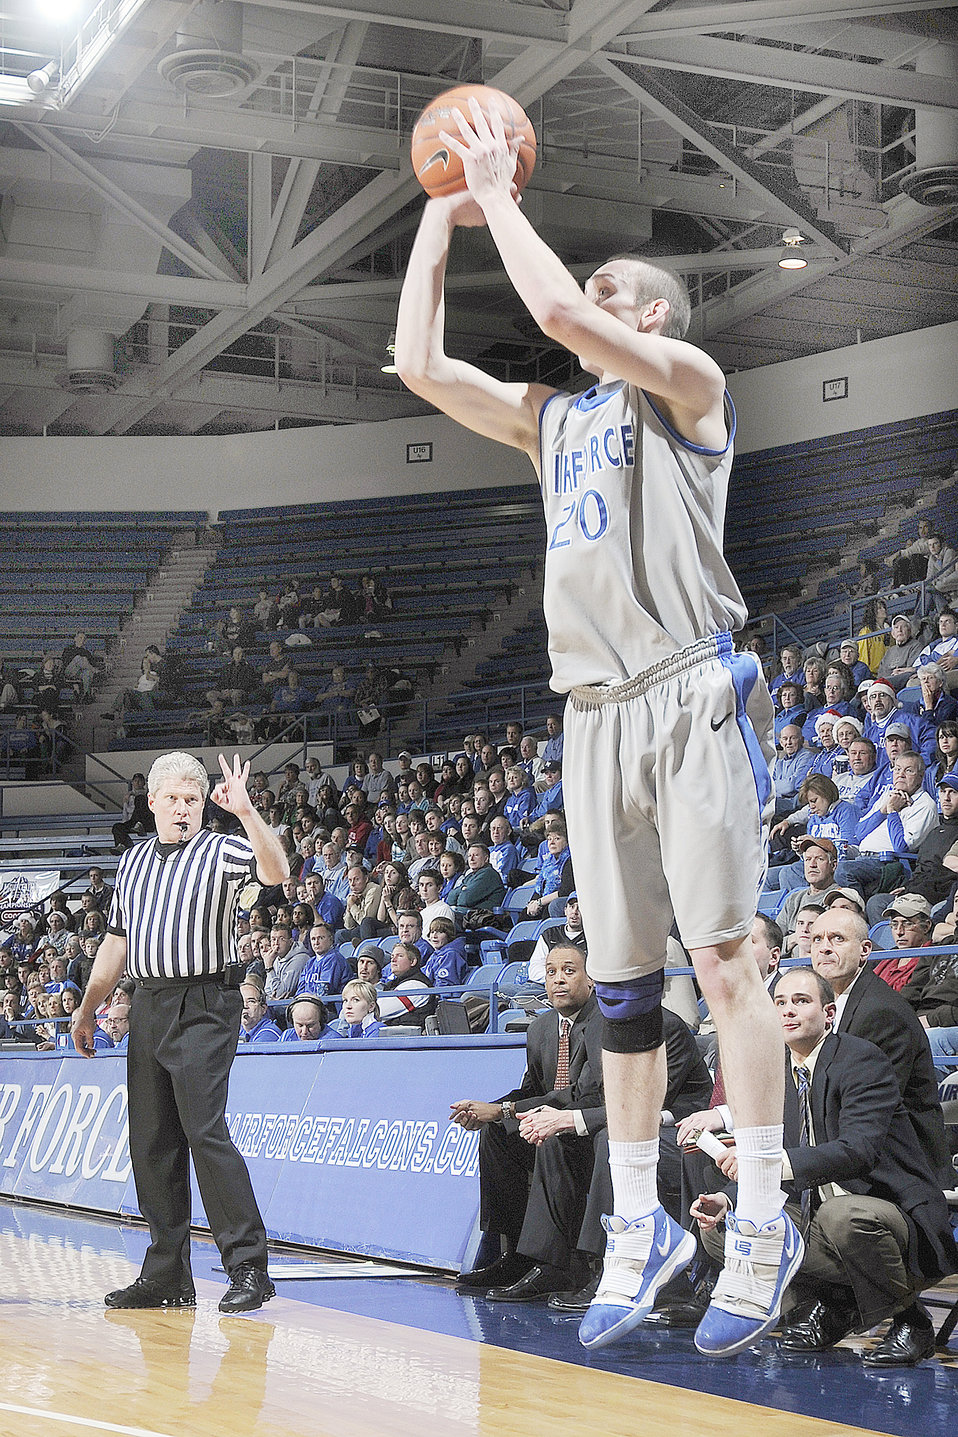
Falcons Defeat UC Davis Aggies

Junior forward Tom Fow shoots for 3 of his game high 30 points as the Falcons rally to defeat University of California-Davis 69-57 Dec. 22, 2009, at the U.S. Air Force Academy, Colo. Fow's 30 points is a team season high and the most points scored by a Falcon since 2007.